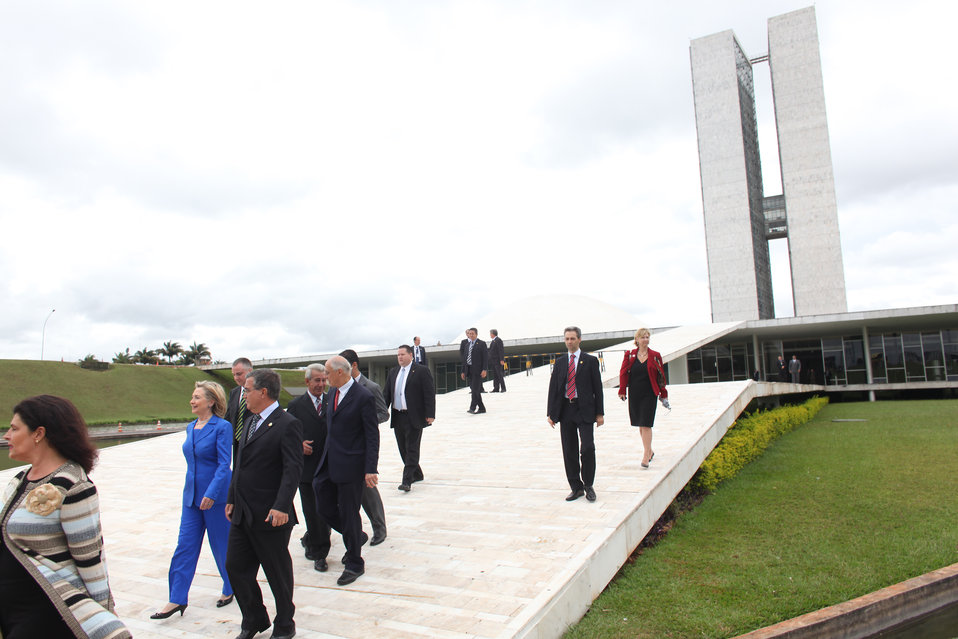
Secretary Clinton Departs Brazilian Congress

U.S. Secretary of State Hillary Rodham Clinton departs the Brazilian Congress after meeting with the Presidents of its two chambers in Brasilia, Brazil March 3, 2010.